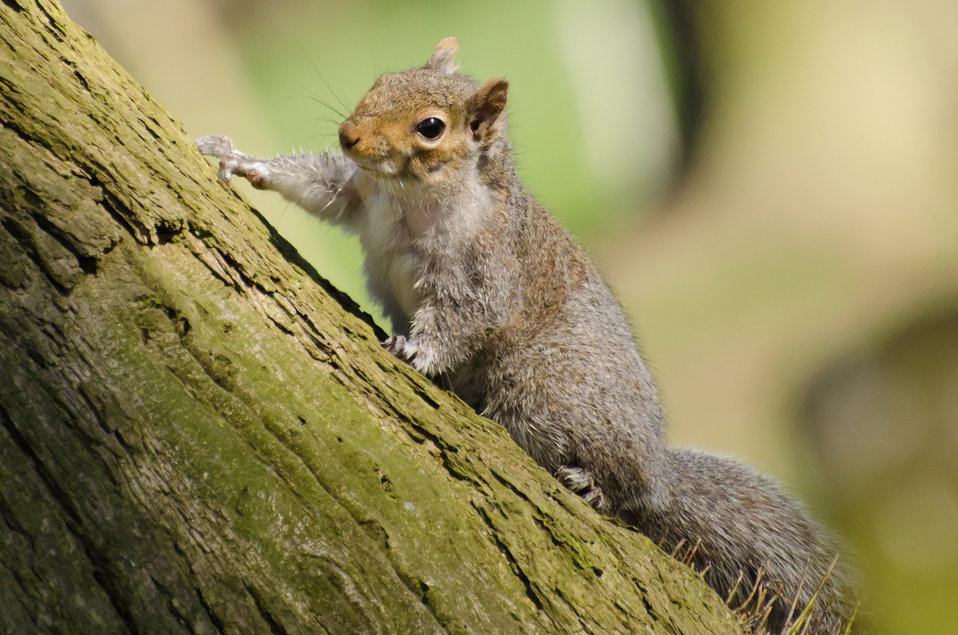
Squirrel - animals.